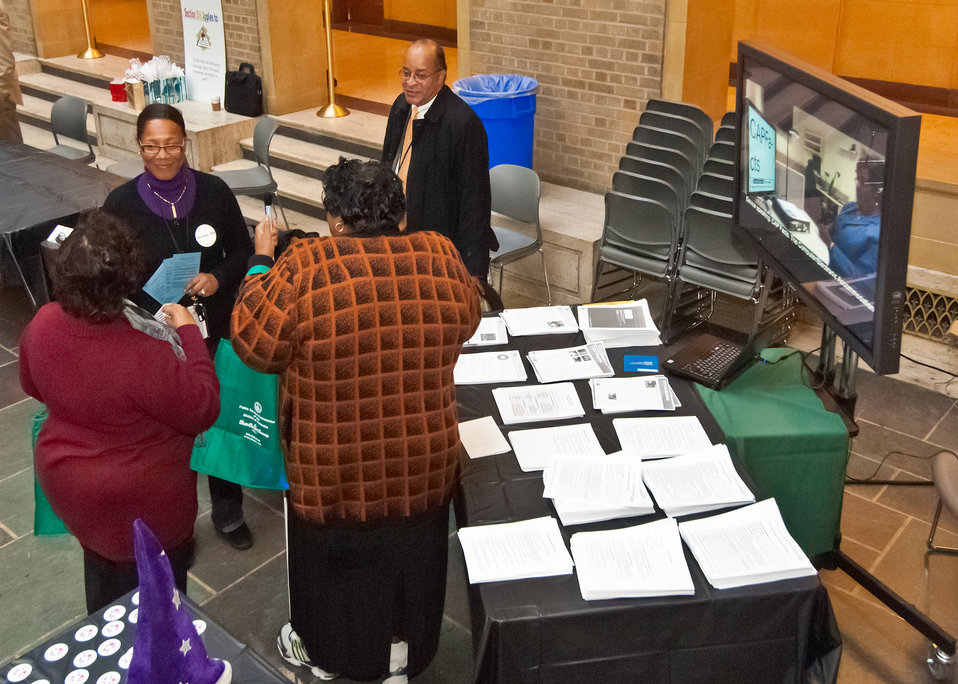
Section 508 Officer Anglea Williams (left) and Acting Director for Information Management, Office of the Chief Information Officer Ronald Anderson (right) explain the Computer Electronic Accommodation Program (CAP) at the U. S. Department of Agriculture (USDA) Section 508 and Disability Awareness Program in Washington, DC, on Monday, Oct. 31, 2011. Sponsored by the Office of the Chief Information Officer, the theme of the event was, “Turning the Key to Unlock and Eliminate Barriers by Providing Accessibility to All.” Section 508 applies to the development, procurement, maintenance or use of electronic and information technology allowing accessibility and awareness to promote inclusiveness to employees and the public with disabilities to information technology managed by the Federal government. Section 508 is part of the USDA’s Cultural Transformation Initiative to hire more employees with disabilities.